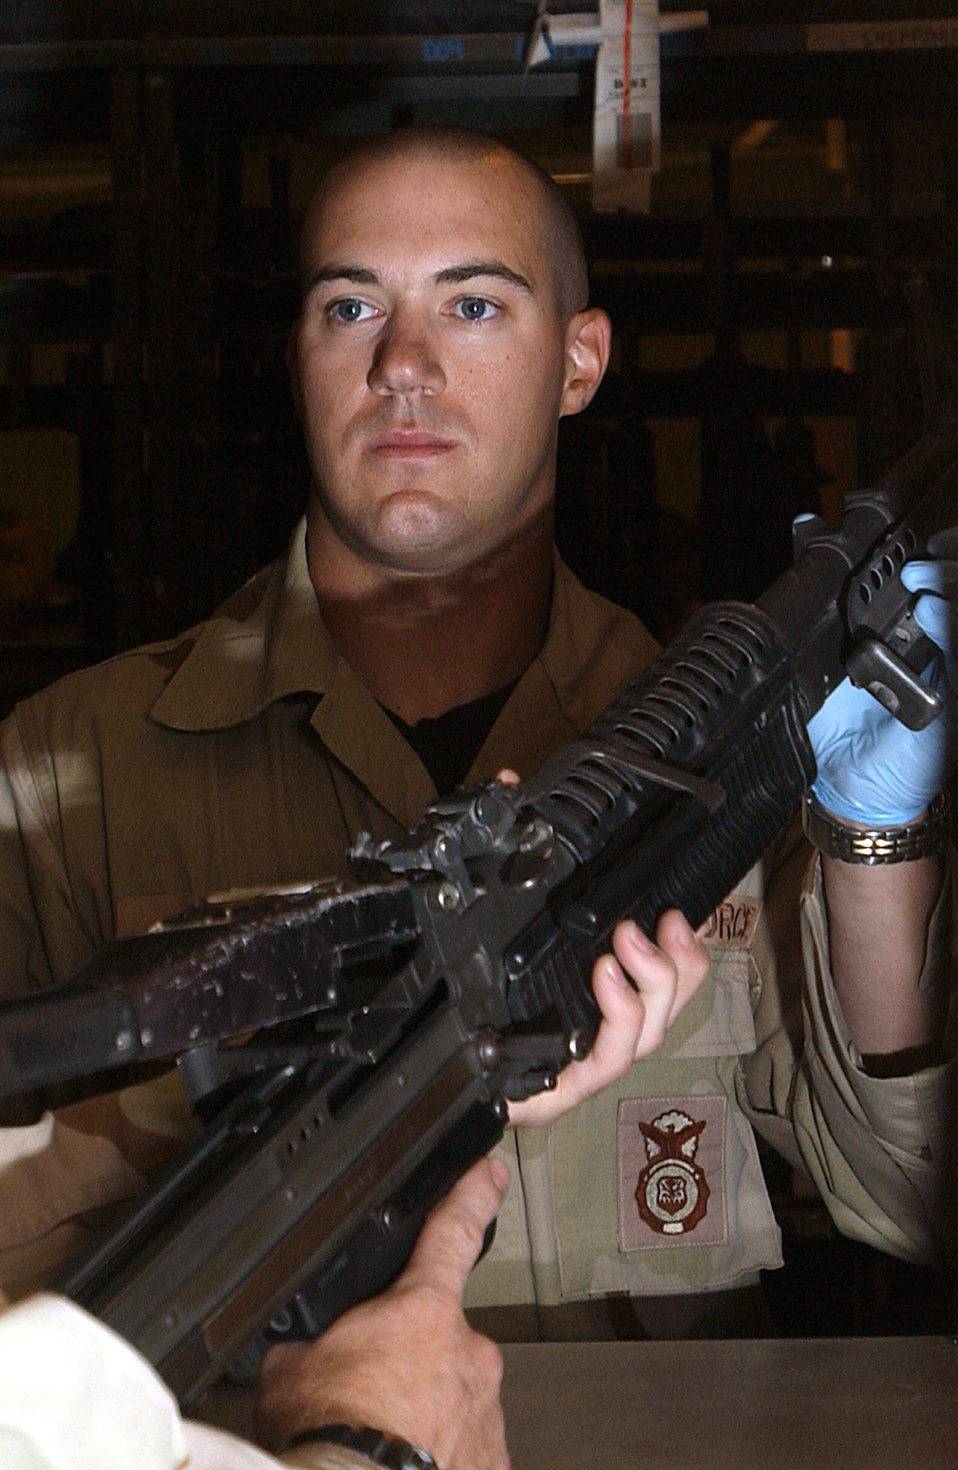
Arming the Airmen

TALLIL AIR BASE, Iraq -- Staff Sgt. Jonathan Samf issues a weapon to a security forces Airman here June 10. Sergeant Samf is a security forces Airman with the 407th Expeditionary Security Forces Squadron.